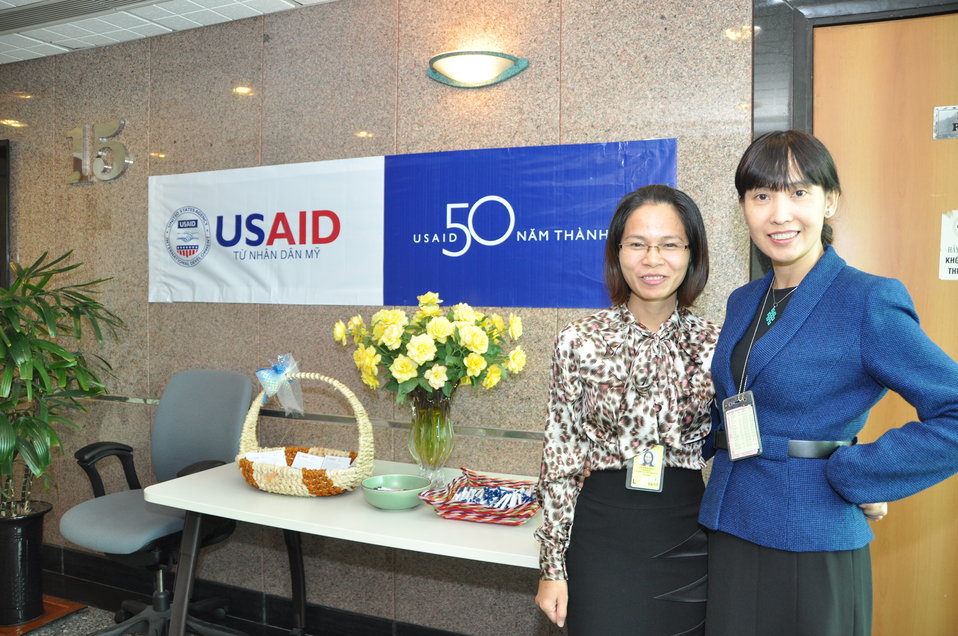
USAID Vietnam Open House 50th Anniversary, Hanoi